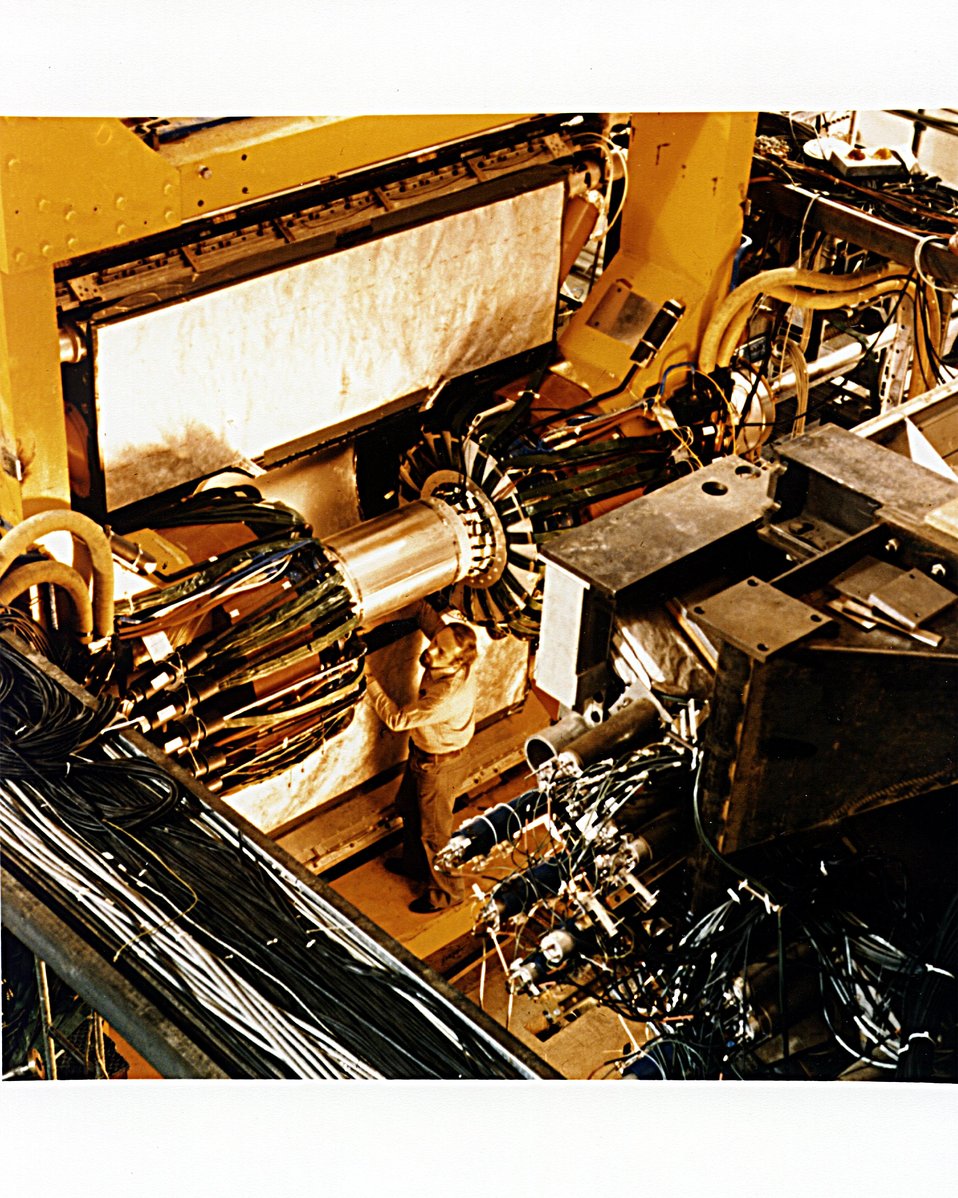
THE DELCO DETECTOR CAN IDENTIFY PAIRS OF LOW-ENERGY ELECTRONS AND POSSIBLY IDENTIFY QUARKS.

THE POSITRON-ELECTRON PROJECT (PEP) IS A JOINT UNDERTAKING OF STANFORD LINEAR ACCELERATOR CENTER (SLAC) AND THE LAWRENCE BERKELEY LABORATORY (LBL). THE PEP MACHINE IS DESIGNED TO STORE BEAMS OF ELECTRONS AND POSITRONS CIRCULA- TING IN OPPOSITE DIRECTIONS AT SINGLE-BEAM ENERGIES BETWEEN 4 GEV AND 18 GEV. THE SOURCE OF THE BEAMS WILL BE THE PRESENT SLAC ACCELERATOR. THE COUNTER-ROTATING BEAMS OF ELECTRONS AND POSITRONS WILL COLLIDE WITH EACH OTHER AT SIX POINTS IN THE MACHINE. THESE COLLISION OR BEAM-INTERACTION POINTS WILL BE USED FOR HIGH-ENERGY PHYSICS EXPERIMENTS.